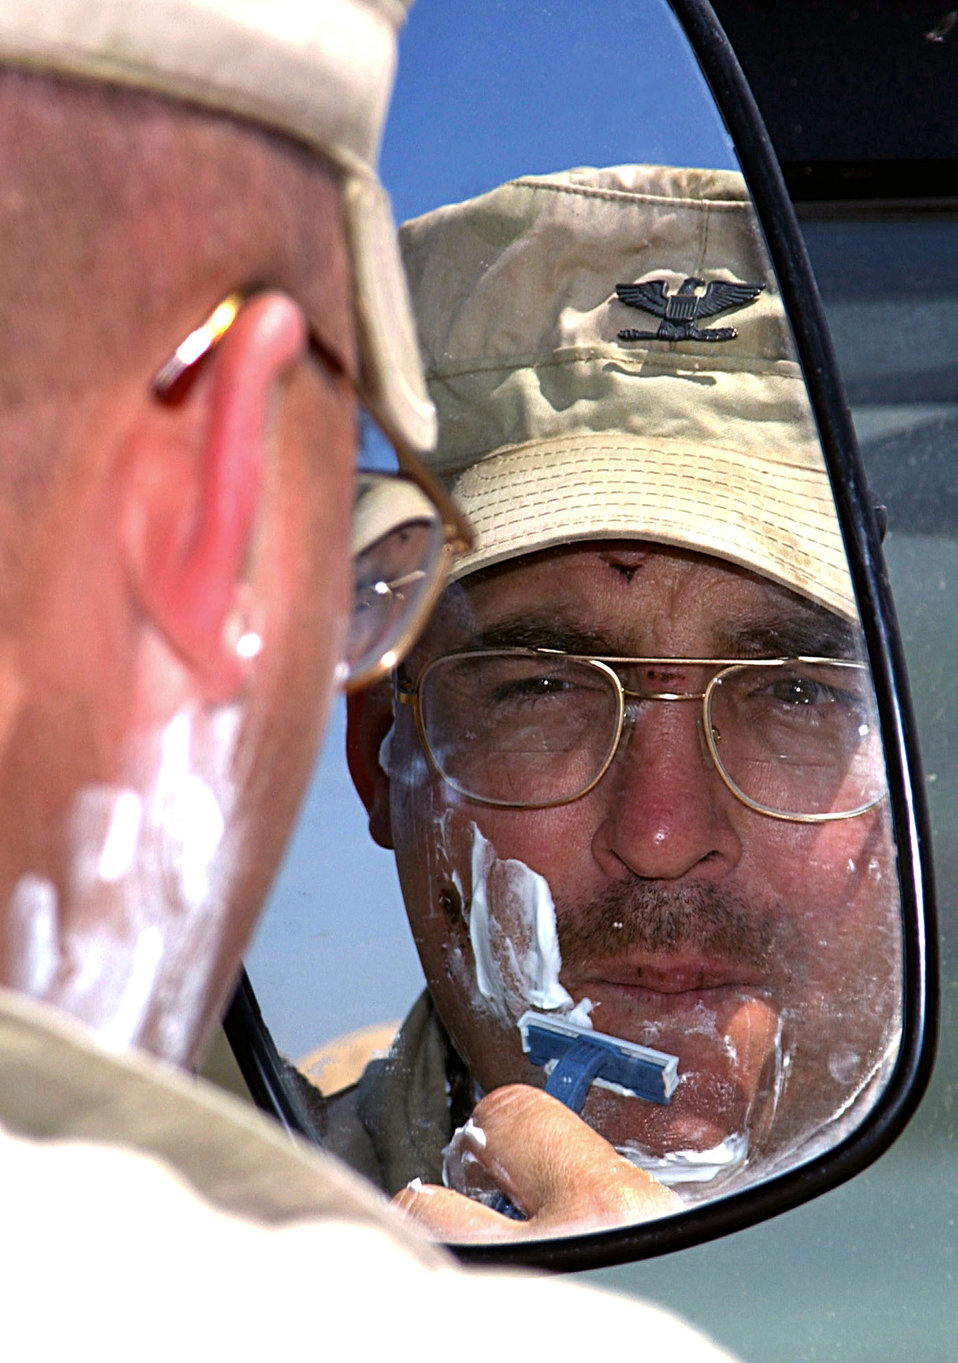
Combat shave

OPERATION IRAQI FREEDOM -- Col. Steve Weart, 86th Expeditionary Contingency Response Group, starts the morning with a combat shave using the side mirror of a HUMVEE April 2, 2003. Operation Iraqi Freedom is the multi-national coalition effort to liberate the Iraqi people, eliminate Iraqi's weapons of mass destruction and end the regime of Saddam Hussein.